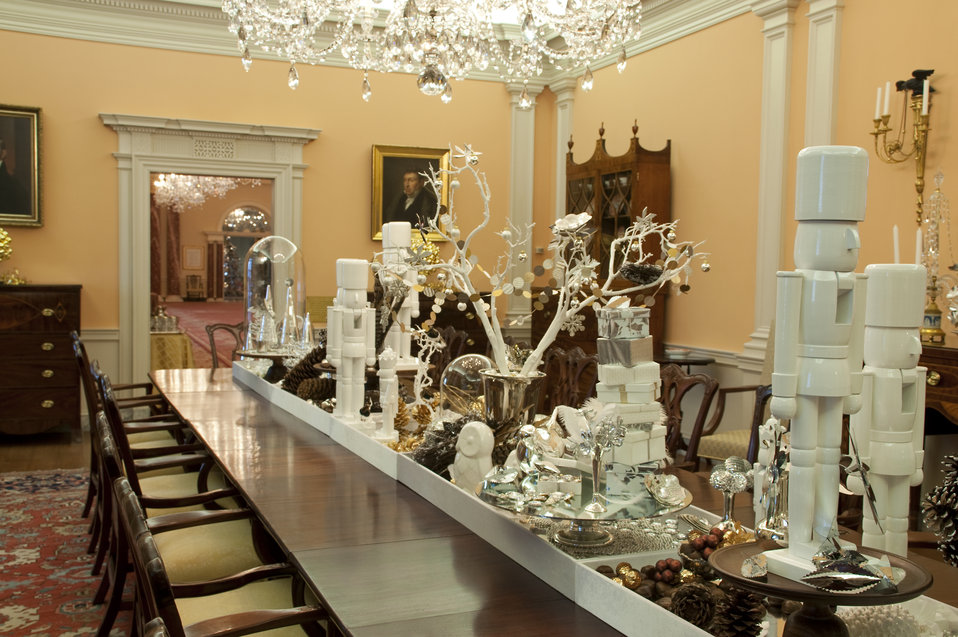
The U.S. Department of State Partners With Time Inc. and InStyle To Decorate the James Monroe Reception Room

The U.S. Department of State partners with Time Inc. and InStyle to decorate the Diplomatic Reception Rooms for the Holidays in December 2010. Pictured in this photo is the James Monroe Reception Room.